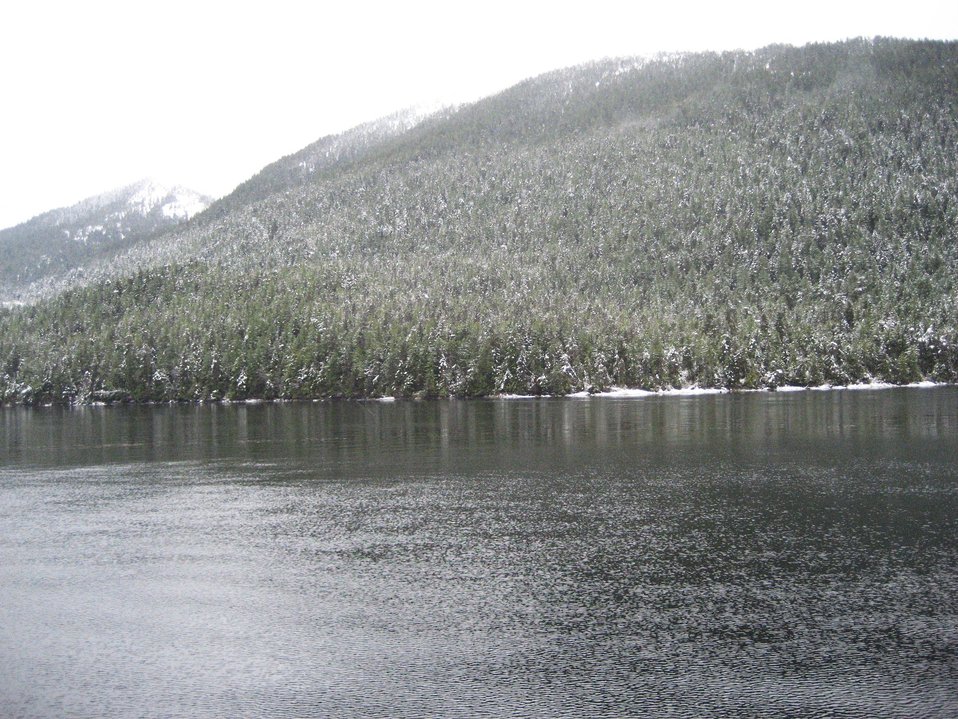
Icy Strait area. A sprinkling of snow.